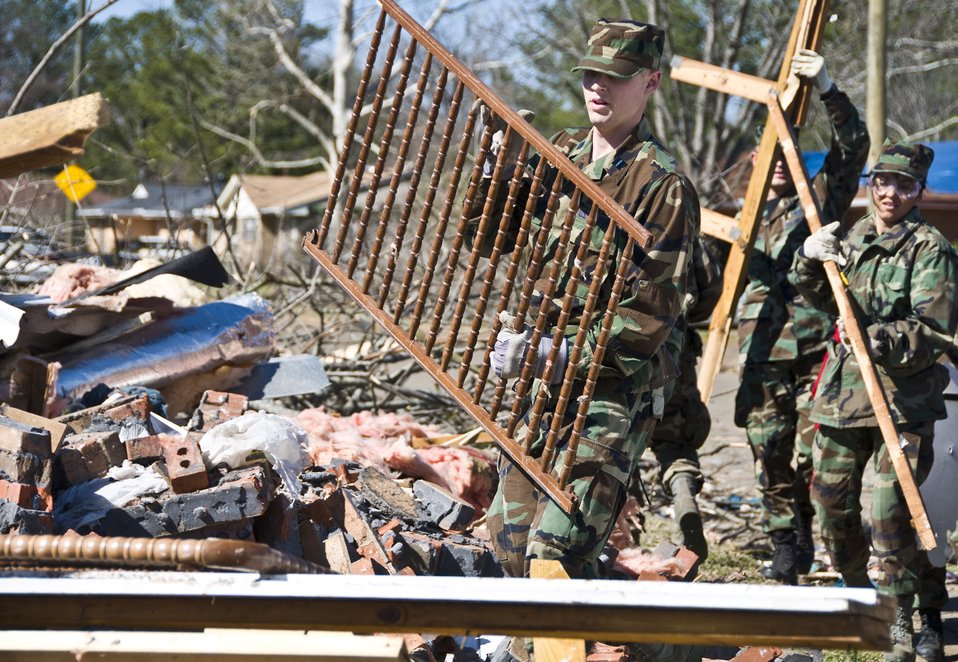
Maxwell Airmen assist city devastated by tornado

Officer Trainee Michael Hart carries whats left of a crib during a cleanup Feb. 19 after a Feb. 17 tornado ravaged Prattville, Ala. More than 65 Officer Training School basic officer trainees and 20 other Airmen assigned to Maxwell Air Force Base, Ala., volunteered to help organize and clear debris from the city located 15 miles northwest of the base. Base officials held an emergency town hall meeting Feb. 19 for victims of the disaster. Some of the representatives that attended the meeting included finance, chaplain, medical, Airman and Family Readiness Center, Air Force Aid Society, Child Development Center, Traffic Management Office and legal. The base's privatized housing developer, Pinnacle-Hunt also offered on-base housing options for military families needing immediate shelter.